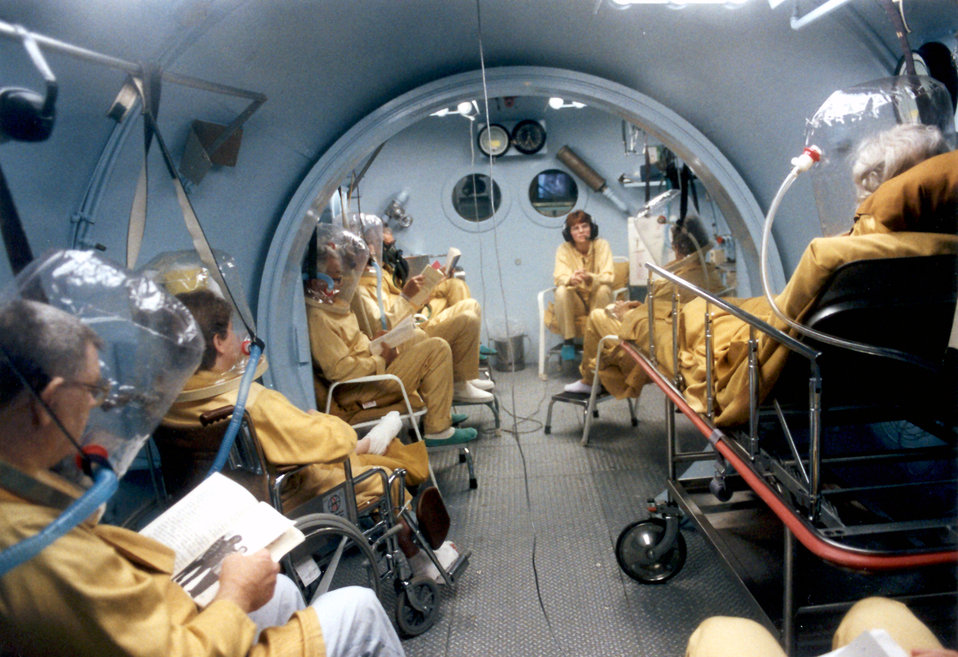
Davis Hyperbaric Laboratory

BROOKS CITY-BASE, Texas -- Patients receive hyperbaric oxygen therapy in the U.S. Air Force School of Aerospace Medicine's hyperbaric medicine division, also known as the Davis Hyperbaric Laboratory. At center is an Air Force technician who monitors the conditions of the patients during the treatment process. The laboratory recently became the first nationally accredited Department of Defense hyperbaric facility.